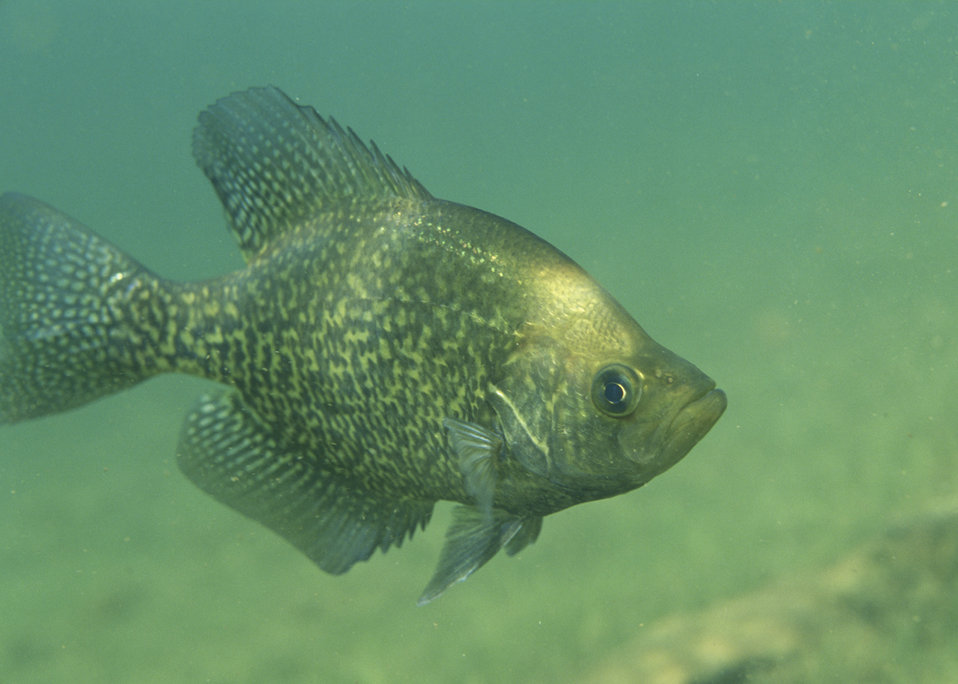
Black crappie.